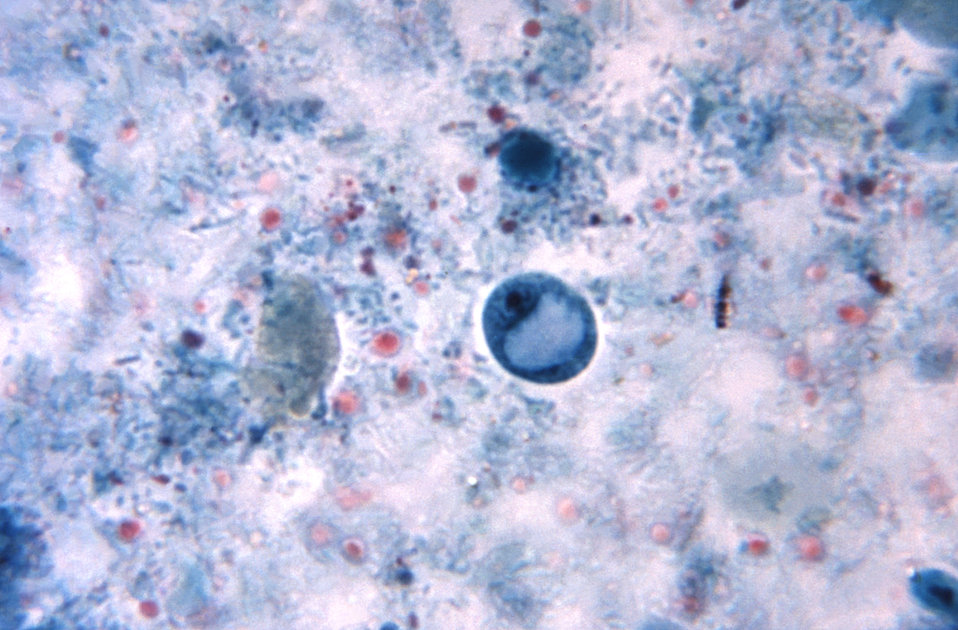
Magnified 1150X, this trichrome-stained photomicrograph revealed the presence of a parasitic Iodamoeba b�ii cyst.